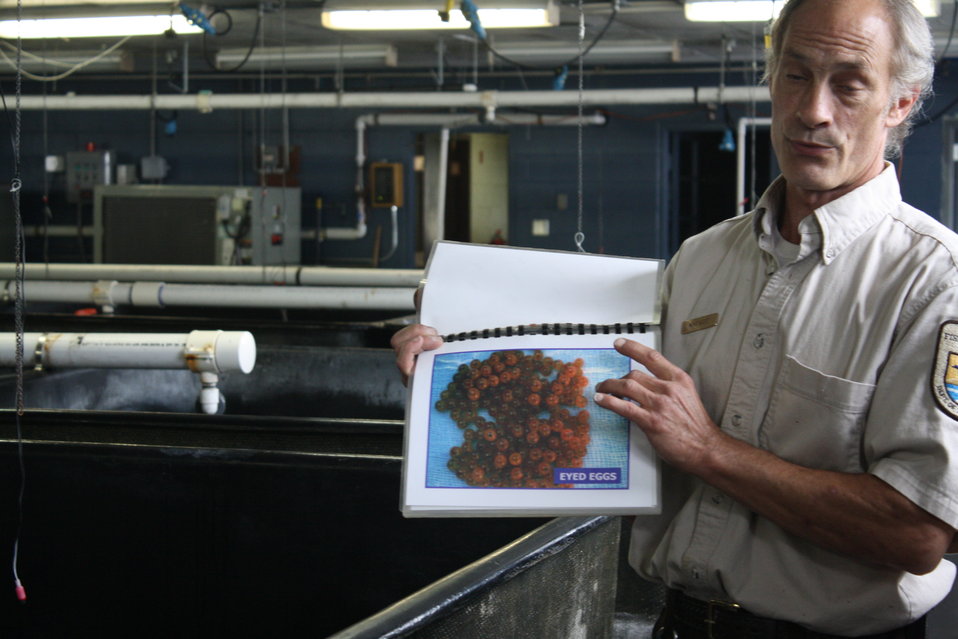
Nashua National Fish hatchery